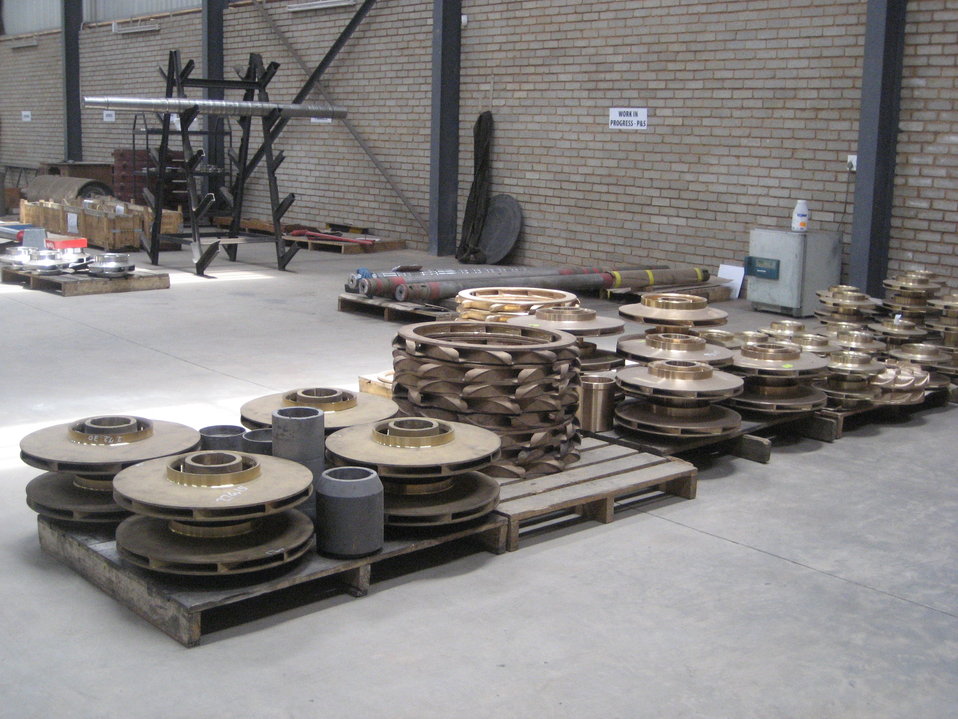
Deputy Secretary Neal Wolin’s trip to Africa 2009

Thermaspray received debt and equity investments from Business Partners - a leading South African investment company. The International Finance Corporation - the private sector lending arm of the World Bank Group - works closely with Business Partners to expand its successful lending model to other sub-Saharan African economies.